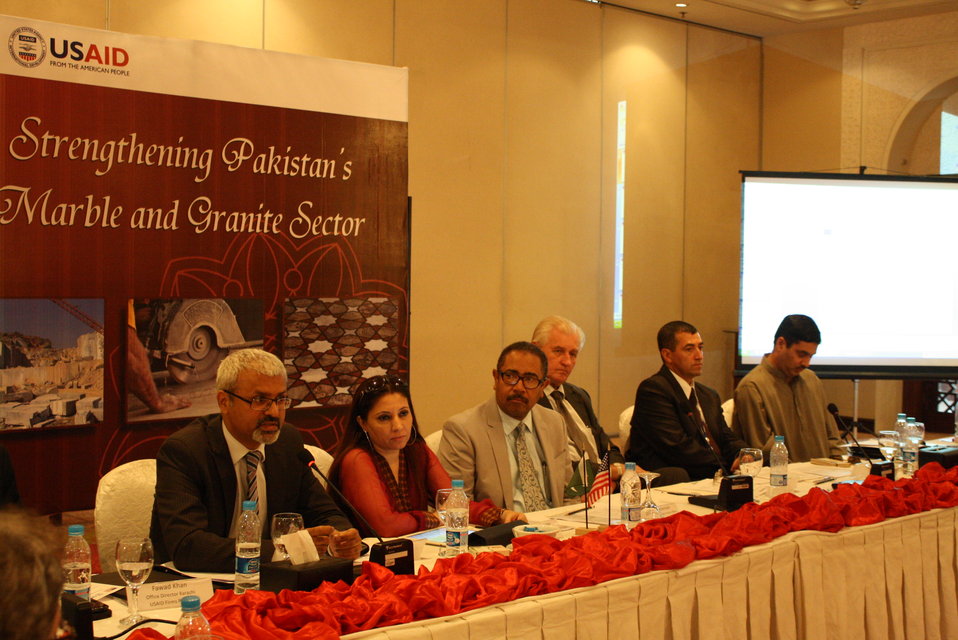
First Consultative Meeting with Marble and Granite Sector Stakeholders 3